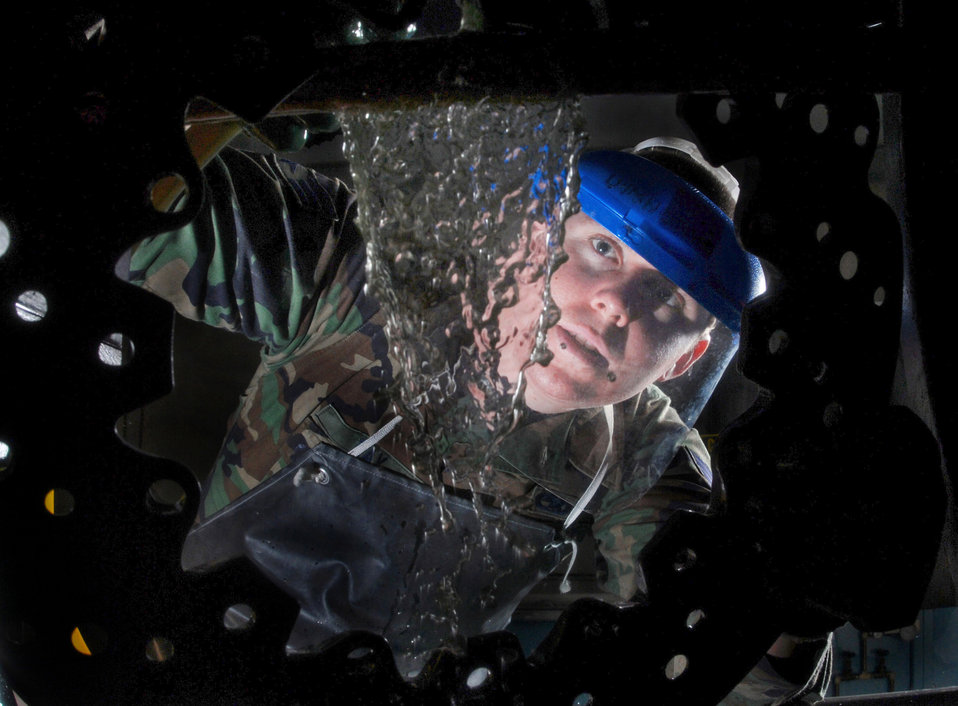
Time for a bath

Senior Airman Jason Ray applies a magnetic particle bath to a KC-135 Stratotanker brake plate Jan. 28 at March Air Reserve Base, Calif. He is checking the brake plate for fatigue and cracks. Airman Ray is a nondestructive inspection technician from the 452nd Maintenance Squadron.